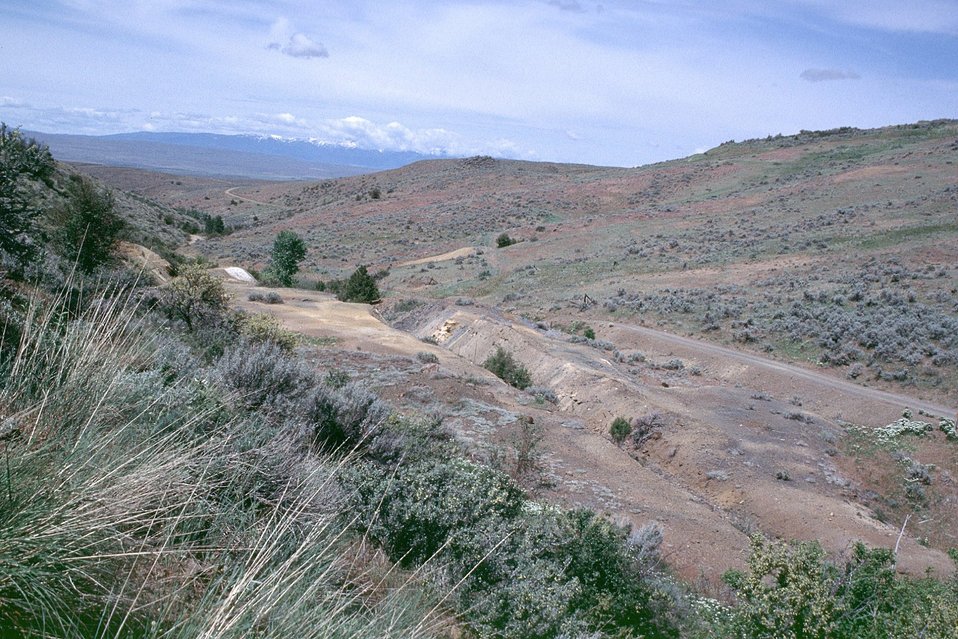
AML Poorman, Vale District, Oregon. Repository.